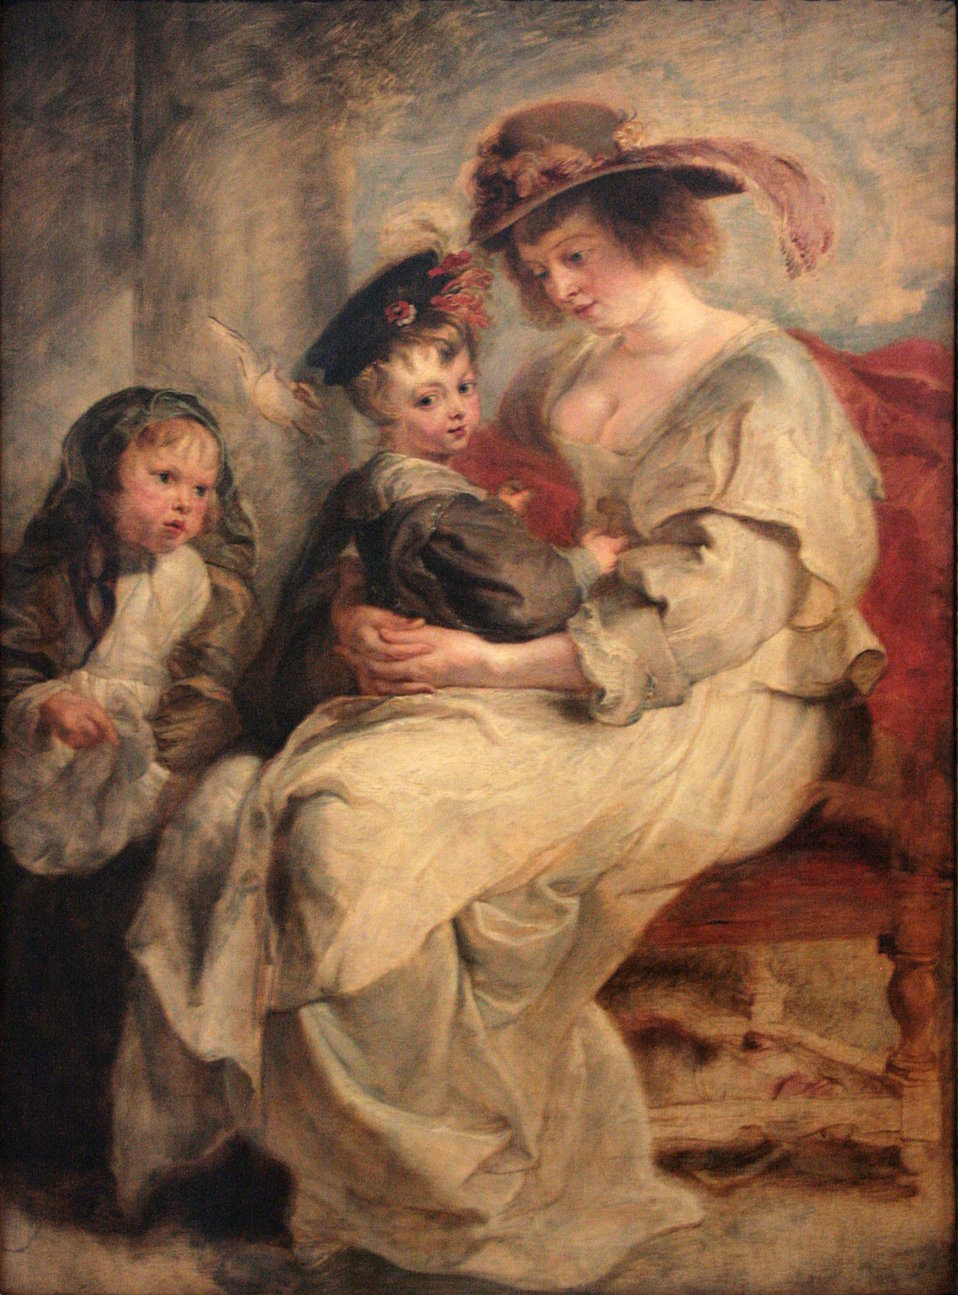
0 Hélène Fourment et deux de ses enfants - P.P. Rubens - Louvre (INV 1795) - (2)